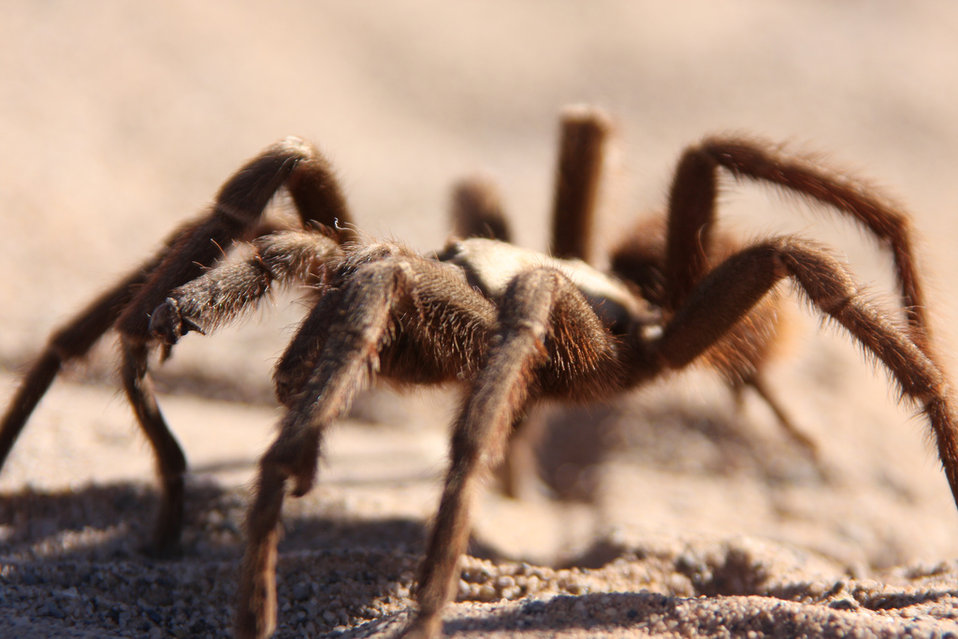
Close up Image of a Tarantula

A close up image of a tarantula walking across the desert sands on the Cabeza Prieta National Wildlife Refuge